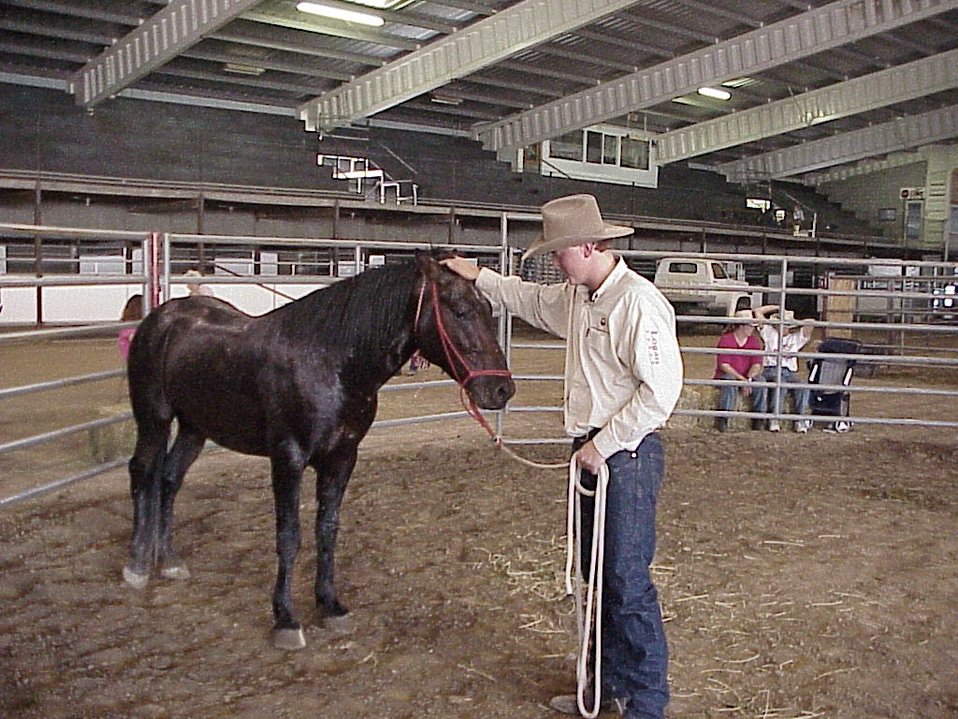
Horse Gentler Mario Johnson Lewiston Wild Horse and Burro Adoption Program Auction WHB indoor auction Cottonwood Field Office UCSC Upper Columbia Salmon Clearwater District